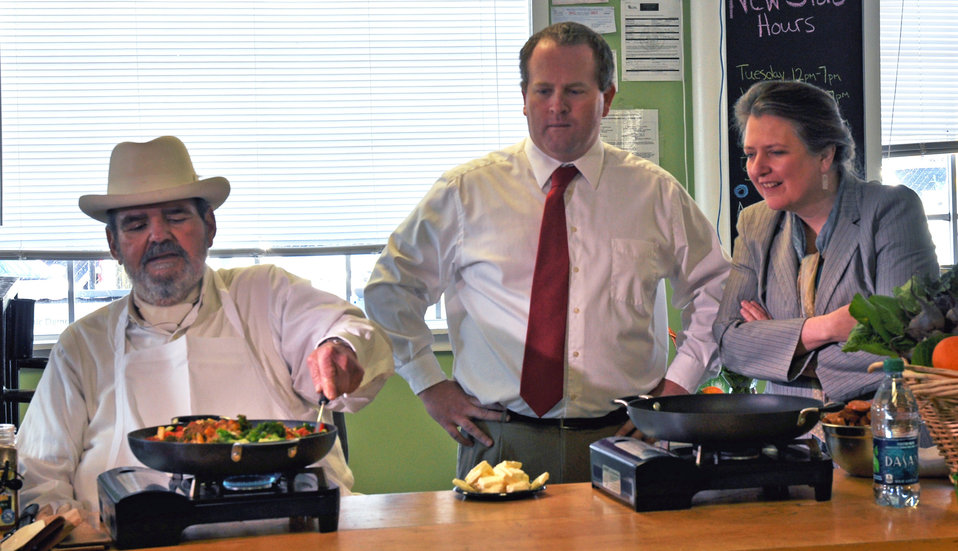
Agriculture Deputy Secretary Kathleen Merrigan and American celebrity Chef Paul Prudhomme visit Hollygrove Farm in New Orleans, LA on Tuesday, Feb. 26, 2013. Deputy Secretary Merrigan and Chef Prudhomme prepare a vegetable plate using local produce to share with community farmers to highlight the strength and resiliency of American agriculture and economic opportunity associated with local and regional food production. Deputy Secretary Merrigan announced a new U.S. Department of Agriculture (USDA) report that highlights new economic opportunities for farmers and ranchers by utilizing food hubs to aggregate their product and USDA’s commitment to increasing economic opportunities for local farmers and ranchers while expanding access to fresh, local foods.